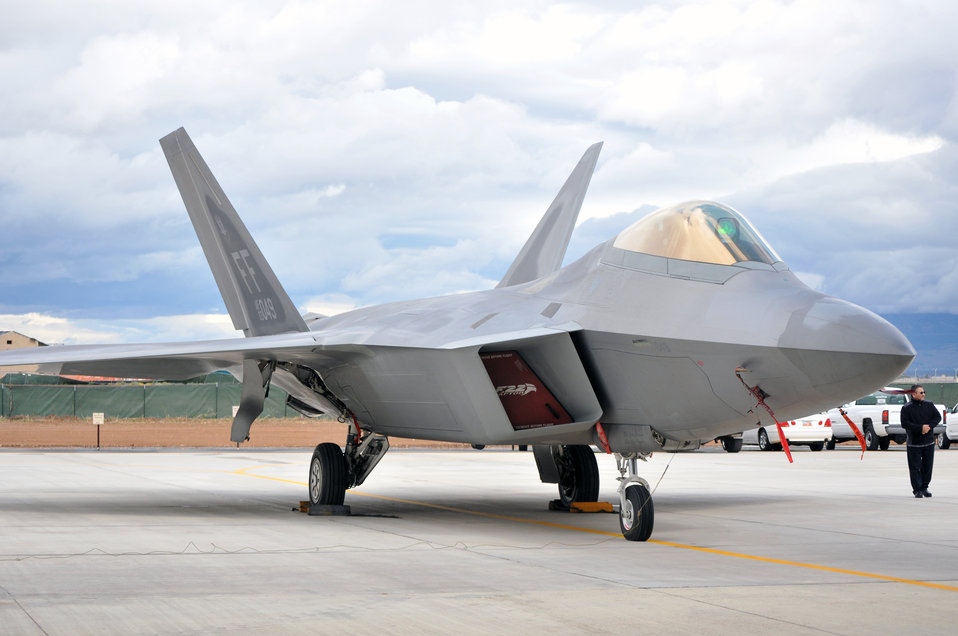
HILL AIR FORCE BASE, Utah -- An Air Force F-22 Raptor sits in front of the new Fuel Composite Overhaul Test Facility at Hill Air Force Base, Utah, Sept. 9. Built by the U.S. Army Corps of Engineers Sacramento District,, the $39.2 million, 75,000 square-feet facility will serve as a painting and maintenance facility for the Raptor.